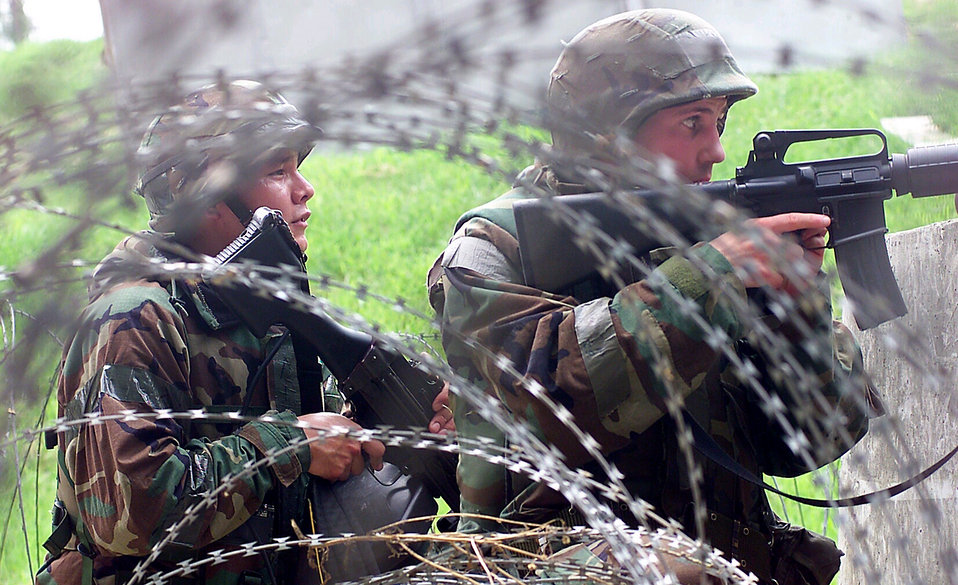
Stand and fight

OSAN AIR BASE, South Korea -- Senior Airman Brandon Hubley (left) and Airman 1st Class Robryan Wartz take aim at enemy forces during exercise Beverly Bulldog 04-03 here July 21. Airman Hubley is a member of the 51st Services Squadron and Airman Wartz is a member of the 51st Security Forces Squadron.